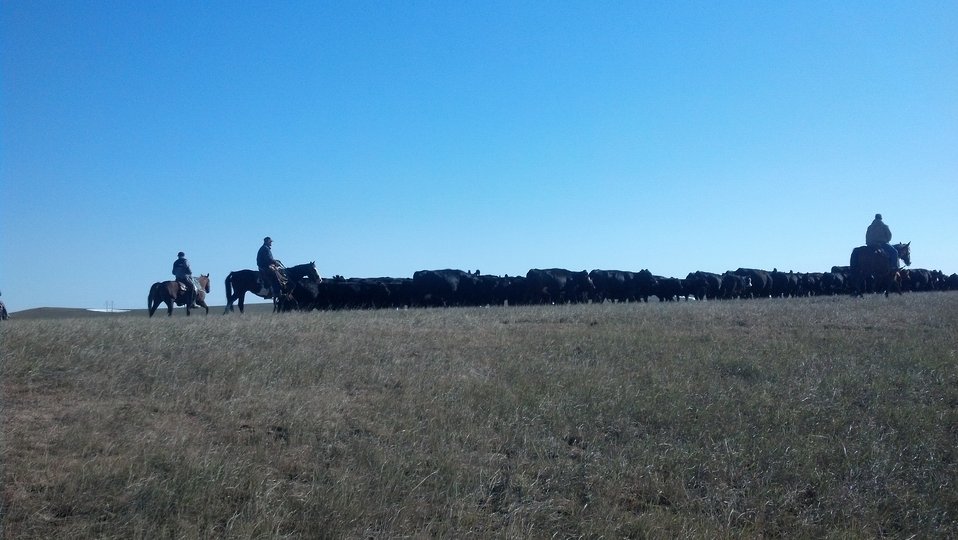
Farmers and ranchers herd cattle that survived the Atlas Blizzard in South Dakota on Oct. 12, 2013.